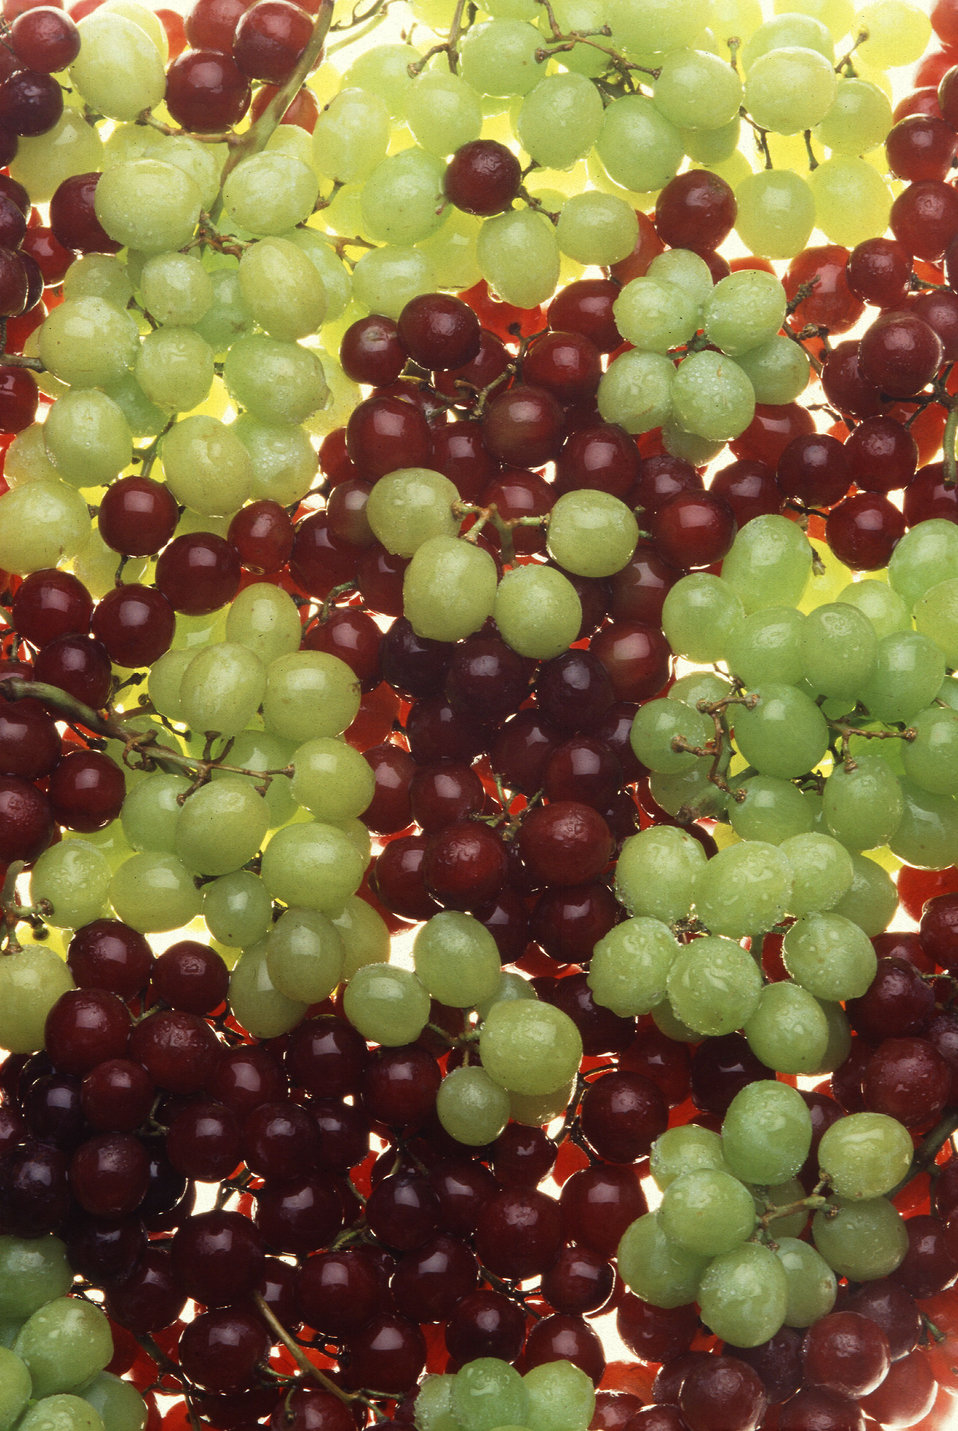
Sweet, juicy grapes, picked at the peak of ripeness, are one of nature's best-tasting treats. In vineyards, greenhouses, and laboratories, U.S. Department of Agriculture (USDA) Agriculture Research Service (ARS) scientists seek to bring even better grapes to your shopping cart tomorrow. The USDA ARS laboratory that developed America's most popular red seedless grape, Flame Seedless, has also offered nurseries and breeders a delicious new black seedless grape. Called Black Emerald, the newcomer is a sweet grape with berries about the size of a dime. The flesh is translucent, firm, and almost crisp. Also watch the supermarket for Autumn Seedless, a light-green grape that became available to nurseries and growers in 1984. It is ready for harvest about 2 weeks before Thompson Seedless.